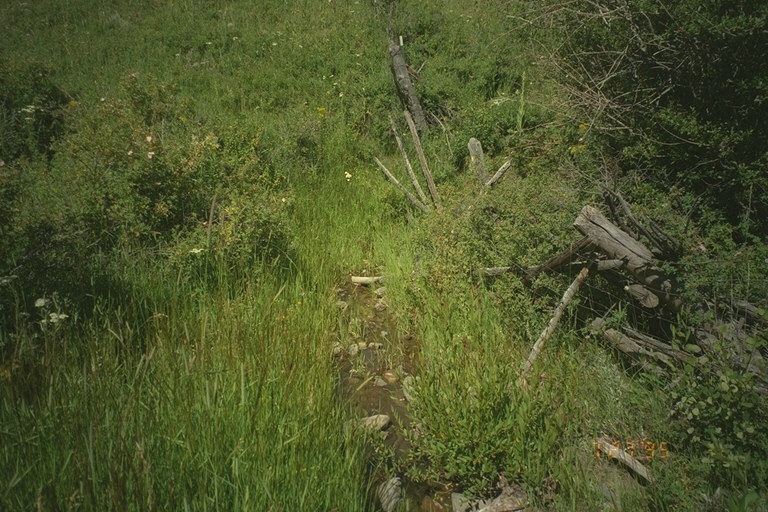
Riparian area Public Lands Salmon Field Office UCSC Upper Columbia Salmon Clearwater District